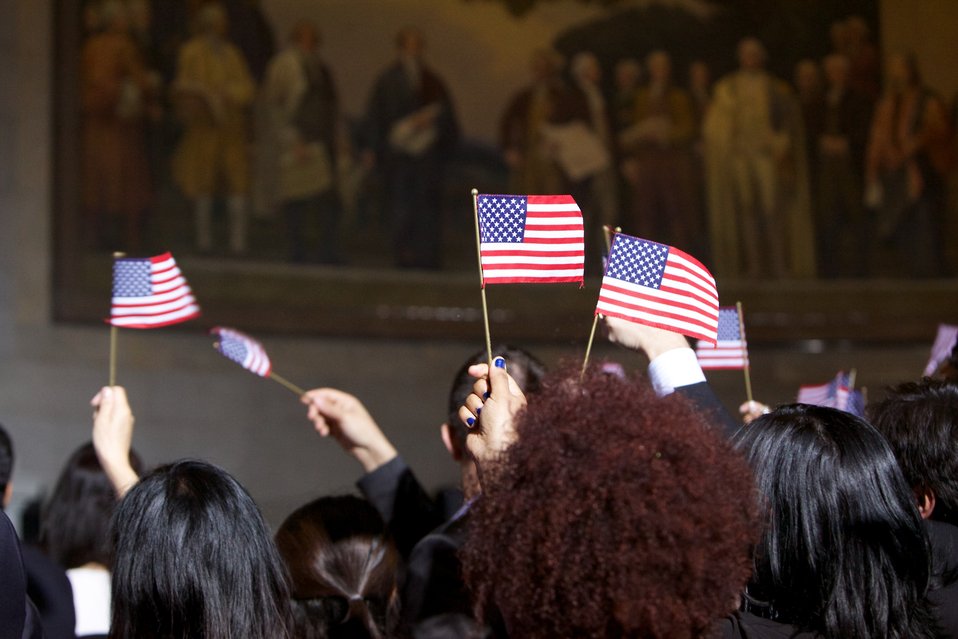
Naturalization Ceremony with Michelle Obama